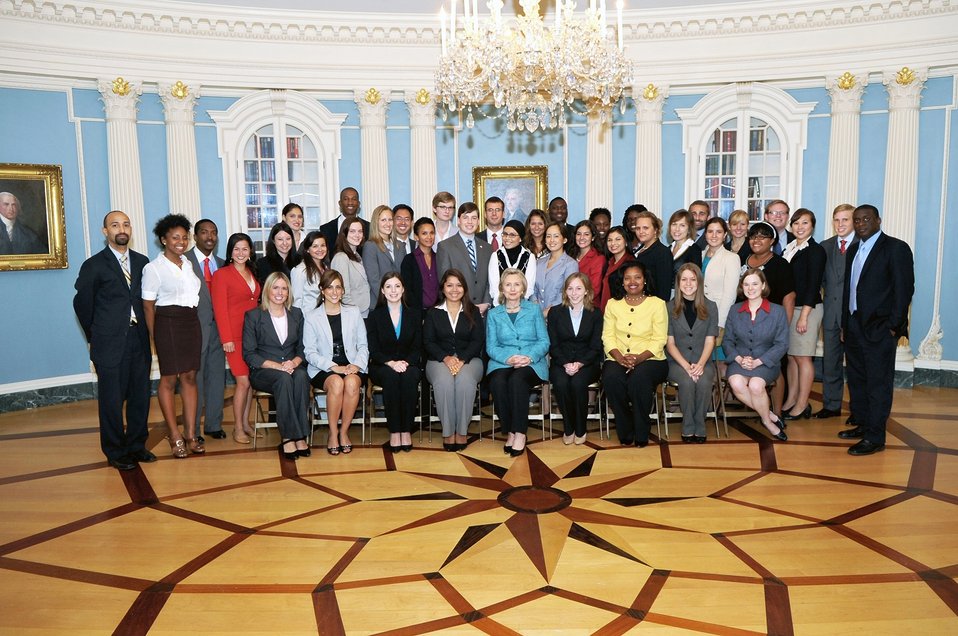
Secretary Clinton Poses for a Photo With Pickering Fellows

U.S. Secretary of State Hillary Rodham Clinton poses for a photo with Pickering Fellows at the U.S. Department of State in Washington, D.C., on July 26, 2010.